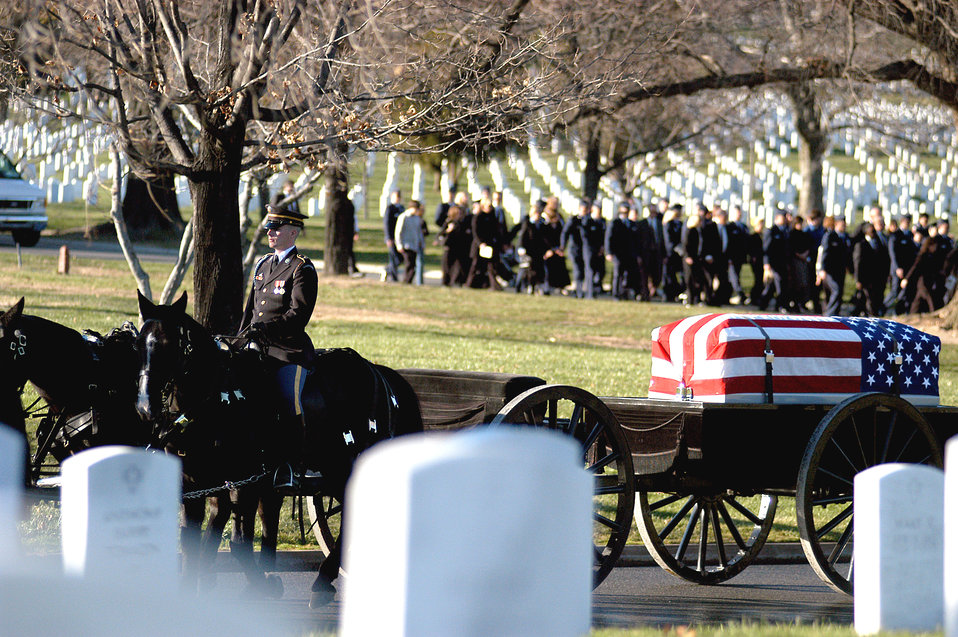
Laid to rest

Members of the Caisson Platoon of the 3rd U.S. Infantry, The Old Guard carry Maj. Troy Gilbert to his gravesite Dec. 11 at Arlington Cemetery. Major Gilbert was the pilot of an Air Force F-16 Fighting Falcon engaged in support of coalition ground combat operations that crashed approximately 20 miles northwest of Baghdad Nov. 27. Major Gilbert was assigned to the 309th Fighter Squadron, Luke Air Force Base, Ariz., and was deployed to the 332nd Expeditionary Wing, Balad Air Base, Iraq.